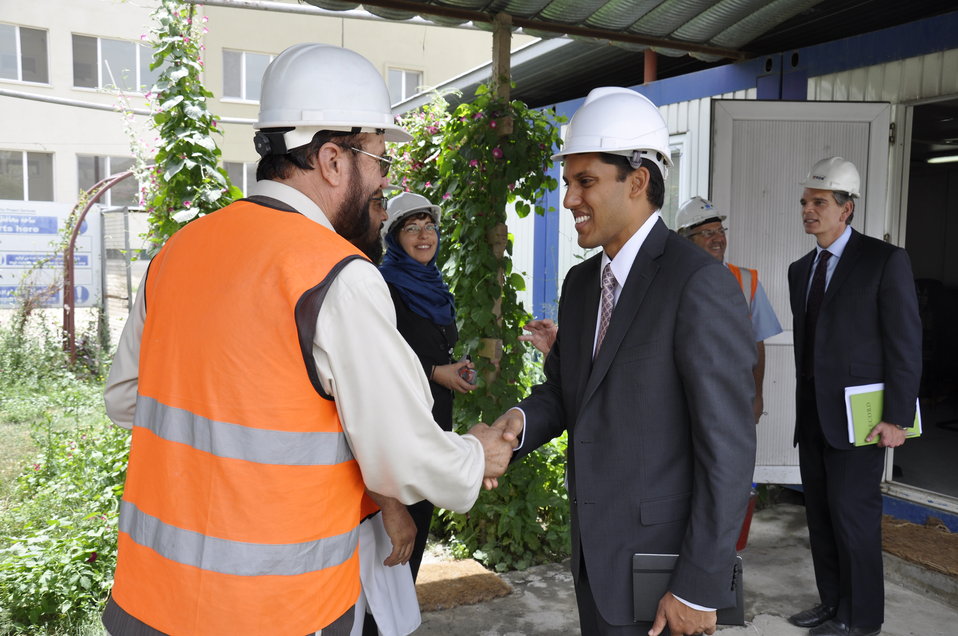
Ghazni High School in Kabul